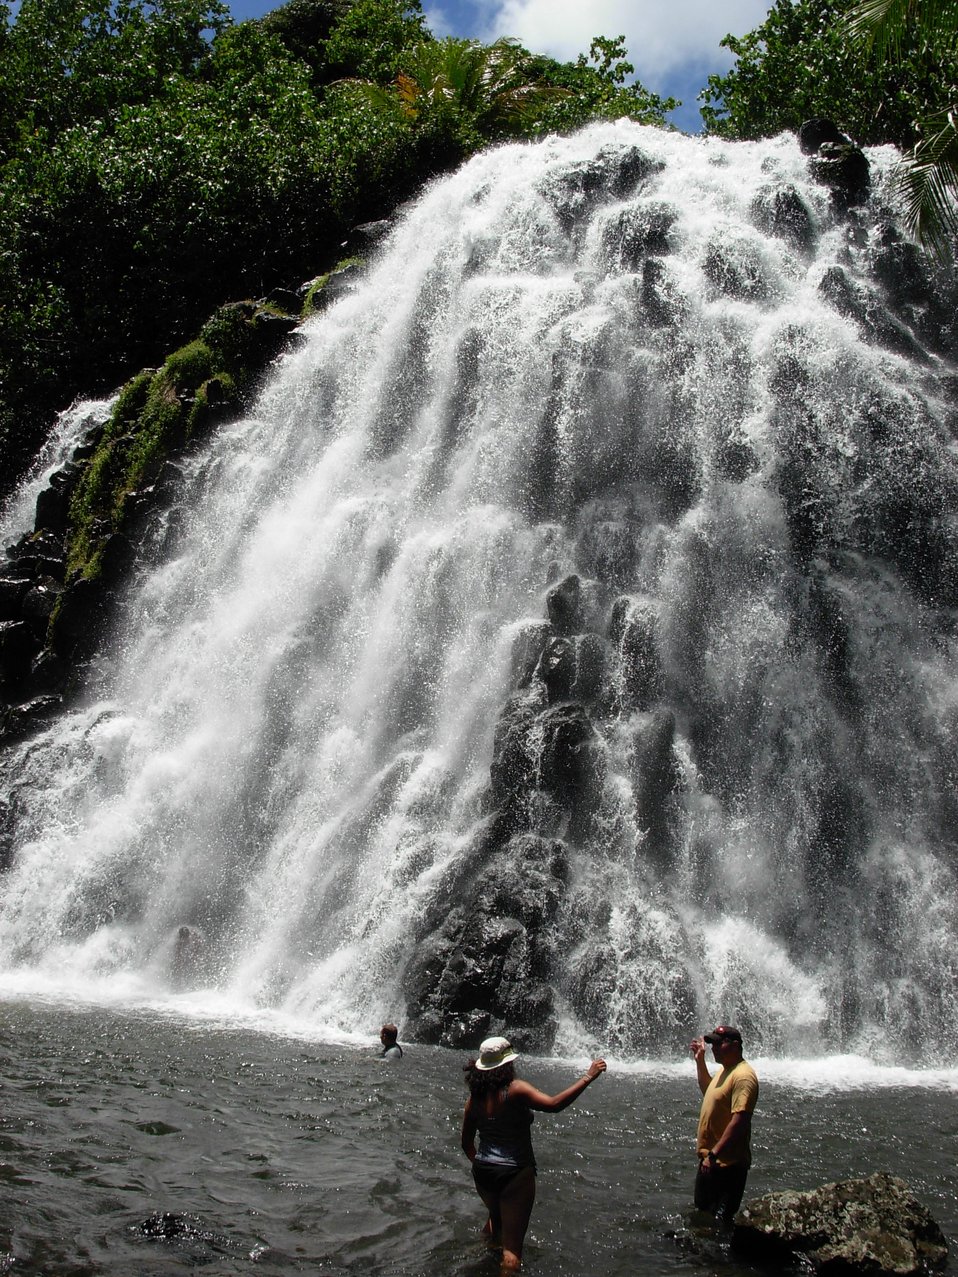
Keprohi (also spelled Kepirohi) Waterfall